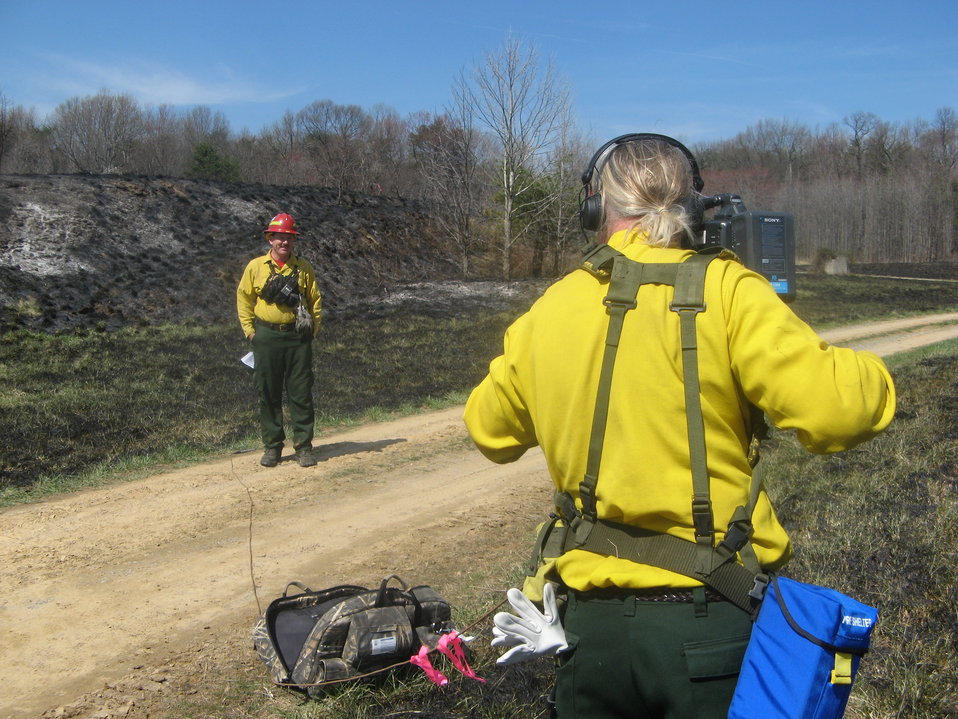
Filming burn boss

Laurel, MD: A videographer films burn boss Steven Hubner after a successful controlled burn at Patuxent National Research Refuge.